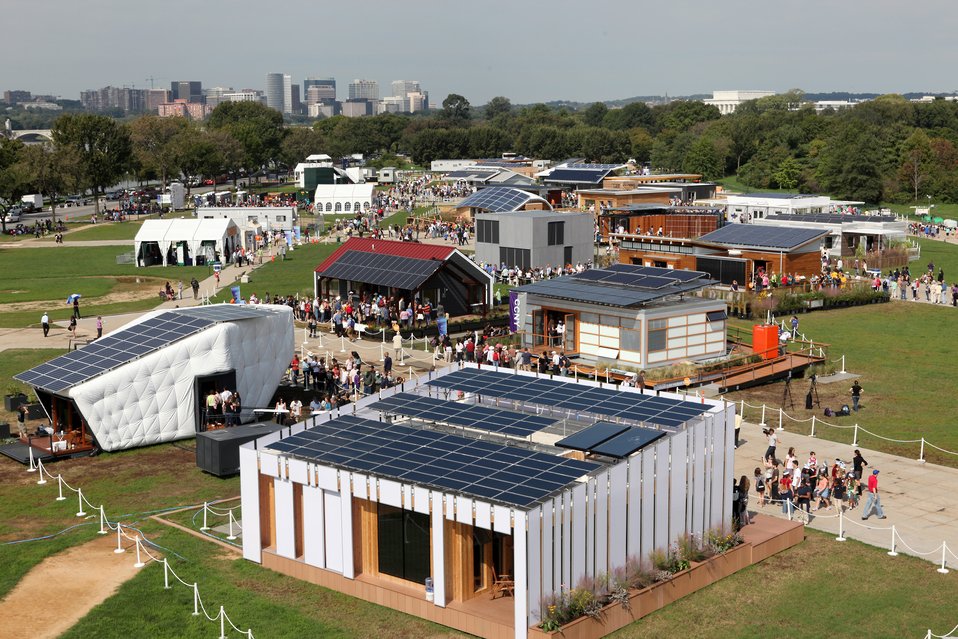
Visitors tour the U.S. Department of Energy Solar Decathlon, Washington, DC, September 30, 2011. (Credit: S.Paltera U.S. DOE / Solar Decathlon)
The Solar Decathlon is a competition that challenges college and university teams from around the world to design, build, and operate solar-powered houses that are affordable, highly energy efficient, attractive, and easy to live in. The 2011 teams and their houses represented a broad range of design solutions, geographic locations and climate, and were targeted toward urban, suburban and rural settings. The houses were intended for different housing markets, including lower-income, disaster relief, retirement, and single family.